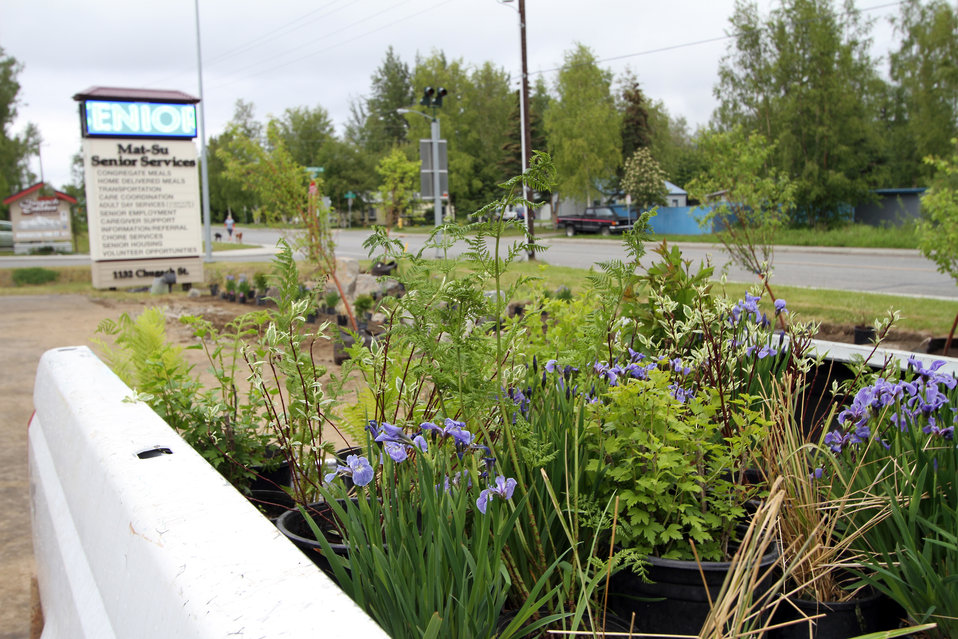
Rain Garden Installation

A rain garden installation at the Palmer Senior Center in Southcentral Alaska. Rain gardens are vegetated areas built specifically to manage stormwater runoff from driveways, sidewalks, roofs, and other paved surfaces. Here, plants wait in a truck bed to be planted. USFWS/Katrina Mueller